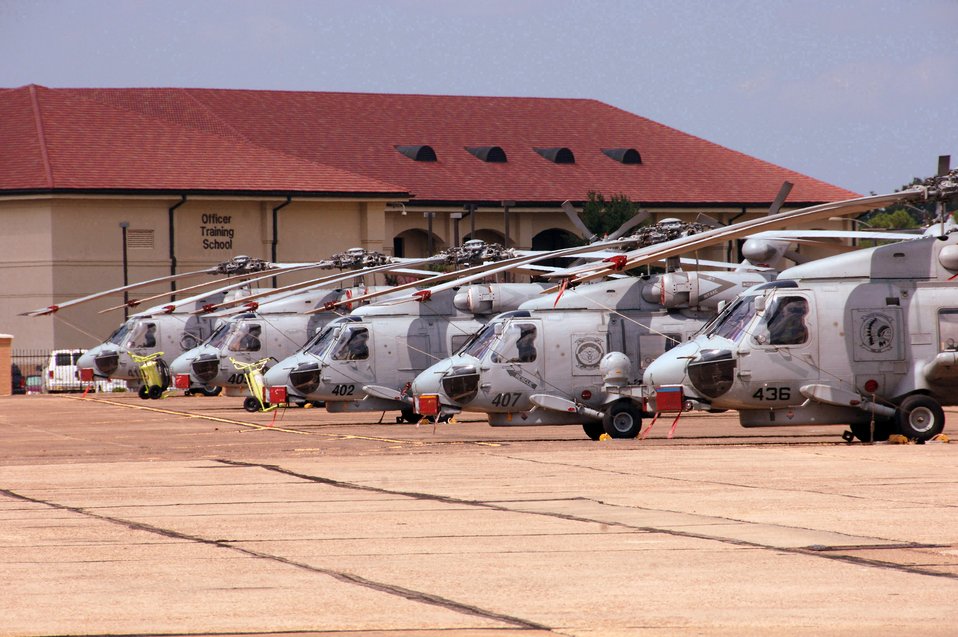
Maxwell shelters Navy Seahawks from Tropical Storm Fay

SH-60B Seahawks line up Aug. 20 at Maxwell Air Force Base, Ala. Based at Naval Station Mayport in Jacksonville, Fla., nearly three dozen Seahawks and 157 personnel flew to Maxwell AFB for shelter from Tropical Storm Fay.